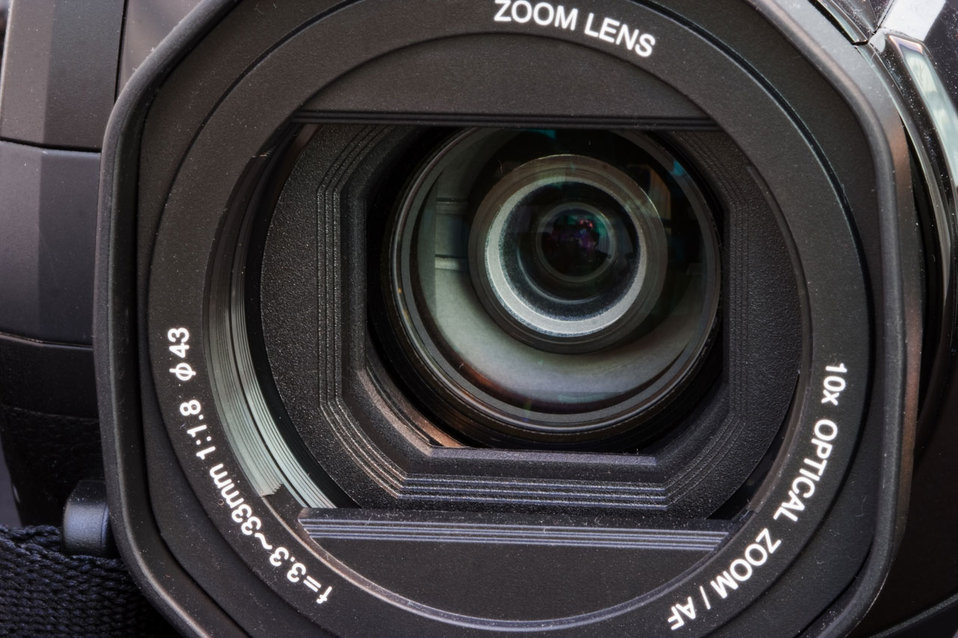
Lens

Camera zoom lens.